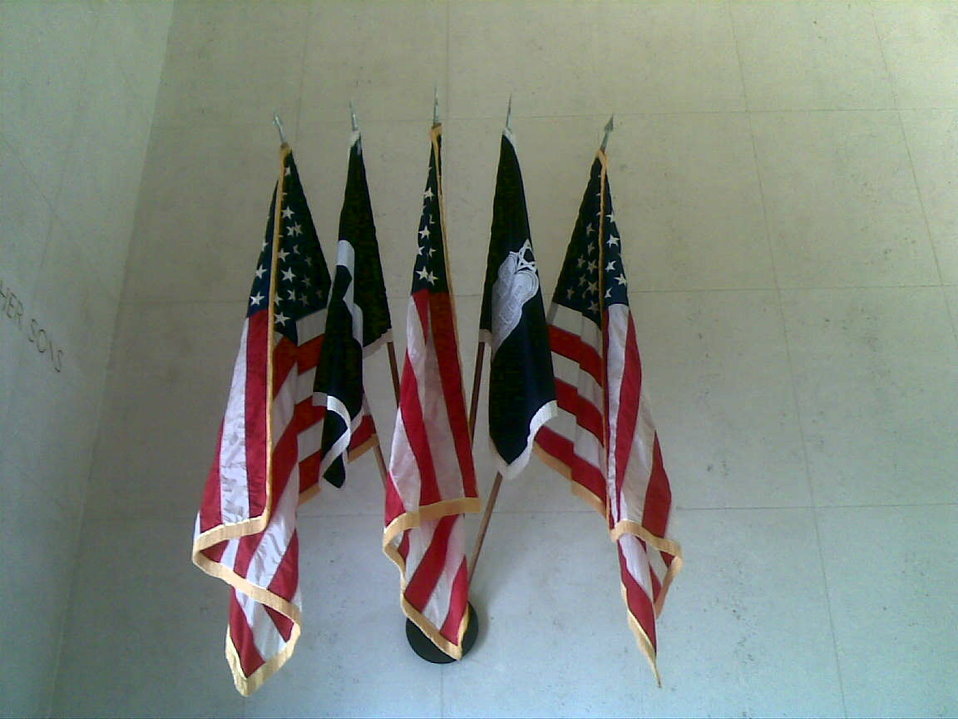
Deutsch: Netherlands American Cemetery, Nationalflaggen und Kirchenfahnen